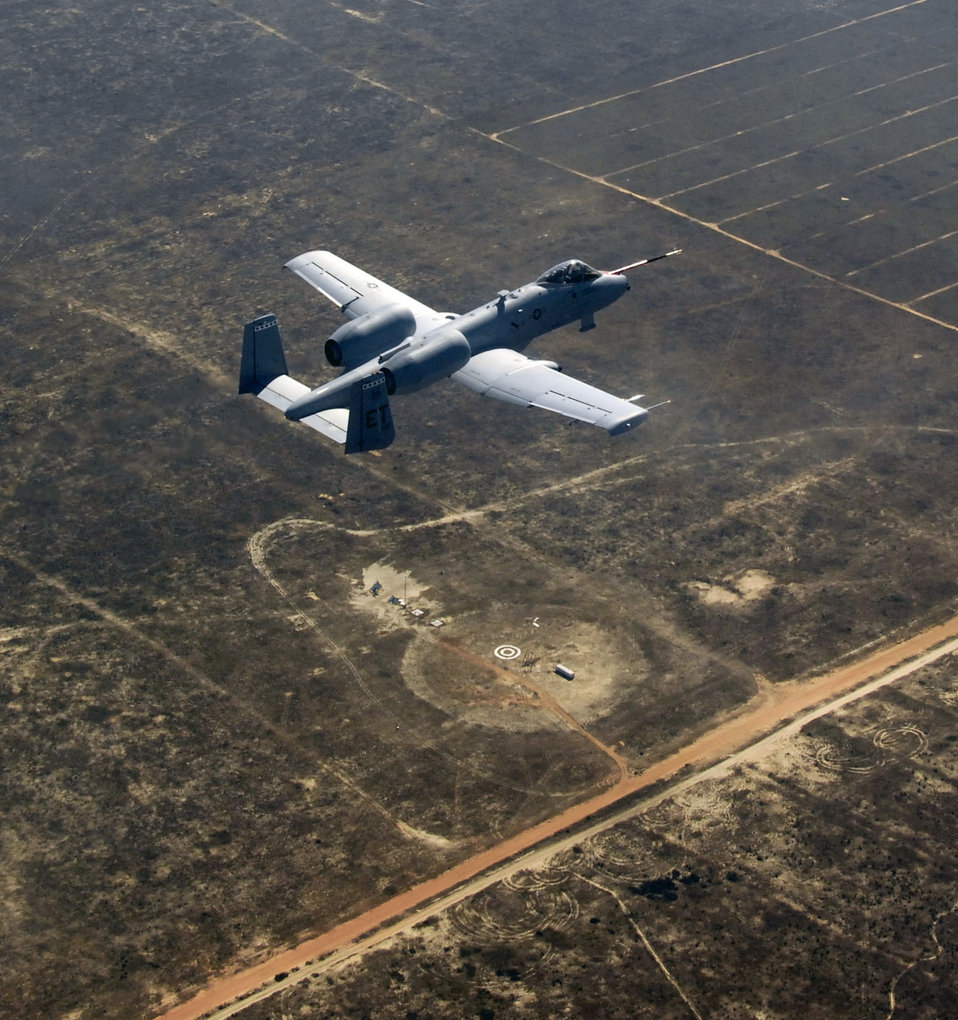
The

An A-10C Thunderbolt II, piloted by Maj. Matthew Domsalla, flies over what's left of a target Nov. 5 that was successfully hit by a Laser Joint Direct Attack Munition dropped by Major Domsalla. This was the first time an LJDAM weapon was dropped from an A-10. The successful test moved this weapon capability for the A-10 closer to fielding for warfighters. Major Domsalla is with the 40th Flight Test Squadron at Eglin Air Force Base, Fla.